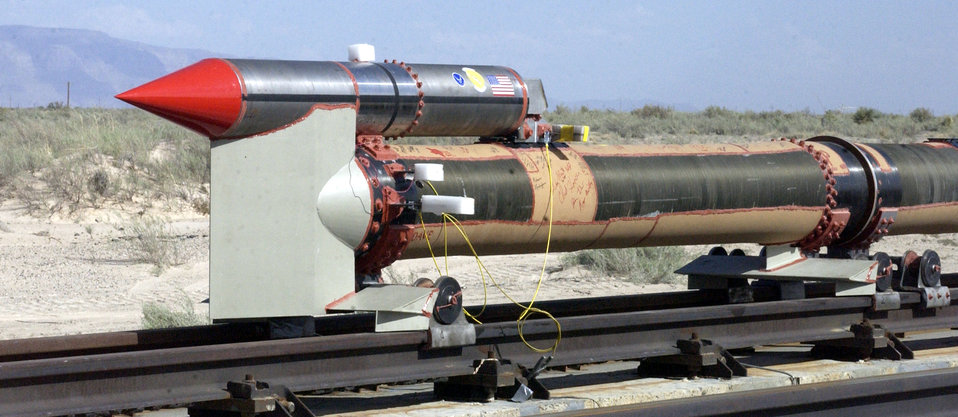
World record

HOLLOMAN AIR FORCE BASE, N.M. (AFPN) -- The 846th Test Squadron here set the world land speed record for a railed vehicle of 6,453 mph, or Mach 8.5, April 30. The six-second event created a flash as the rocket-propelled sled traveled 16,120 feet.